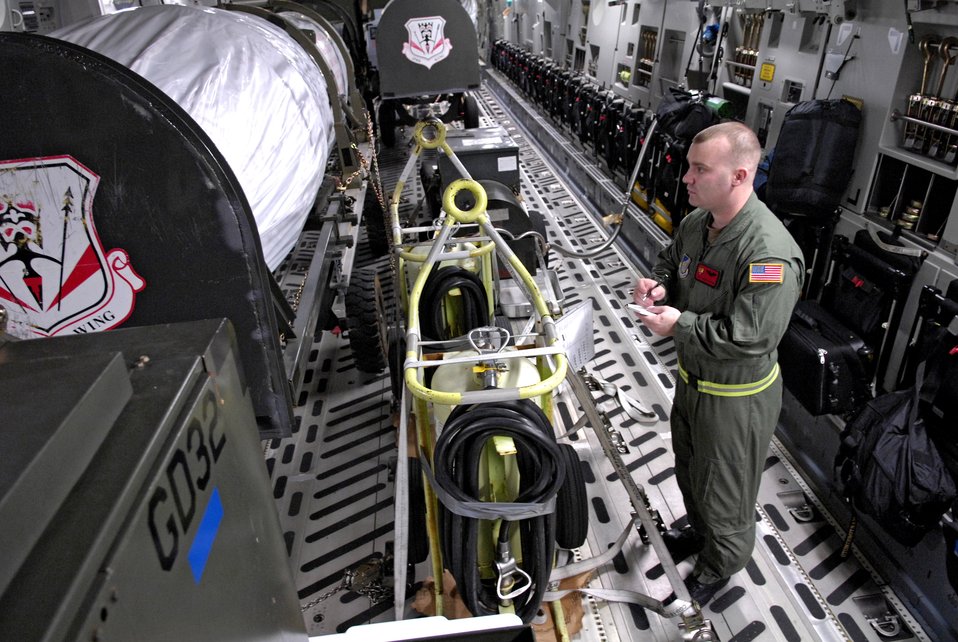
C-17 delivers strategic capability

Staff Sgt. Jason Scaffidi writes down positions and weights of equipment on a C-17 Globemaster III Jan. 25 at Hickam Air Force Base, Hawaii. Sergeant Scaffidi is a loadmaster with the 535th Airlift Squadron. The aircraft can perform tactical airlift and airdrop missions and can also transport litters and ambulatory patients during aeromedical evacuations when required.